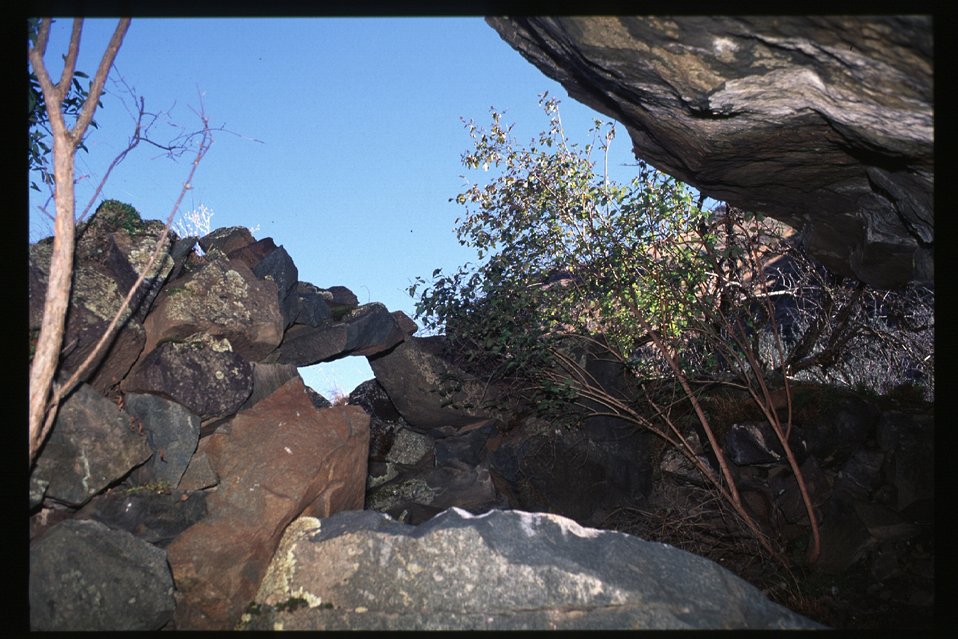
Historic cook hut possibly chinese Lower Salmon River Cottonwood Field Office UCSC Upper Columbia Salmon Clearwater District